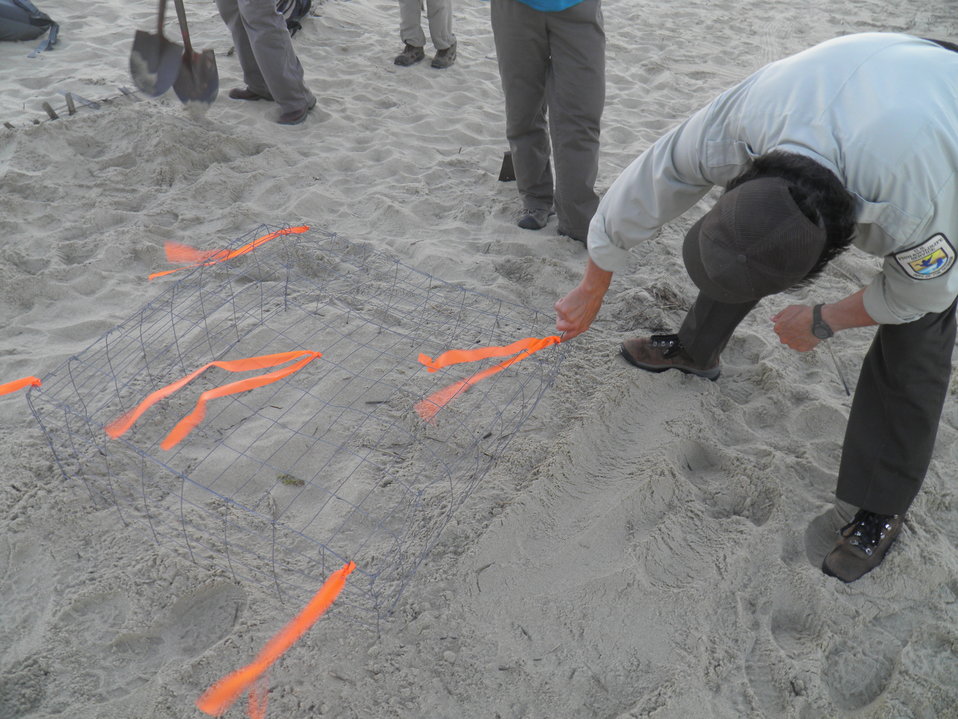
Secured Sea Turtle Nest at Dam Neck Naval Base

Credit: USFWS
Crawl 3, Nest 3